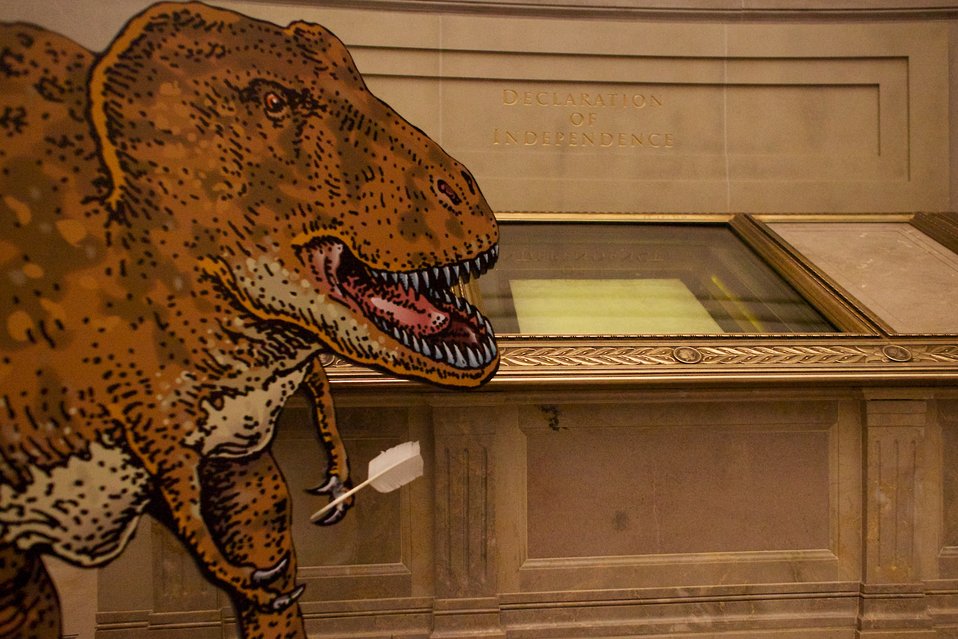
Smithsonian Institution's TRex visits the National Archives